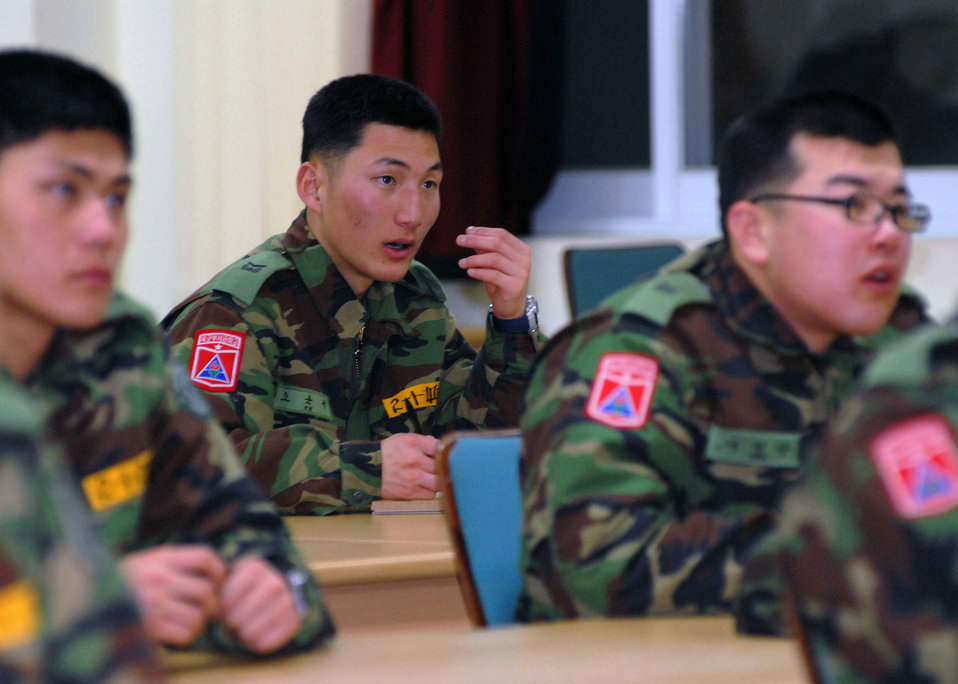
Kunsan Airmen teach English to South Korean cadets

South Korean army NCO Academy students repeat phrases after their instructor Jan. 31 at Kunsan Air Base, South Korea. Numerous Airmen from the 5/6 group volunteer to teach assist South Korean army cadets English.